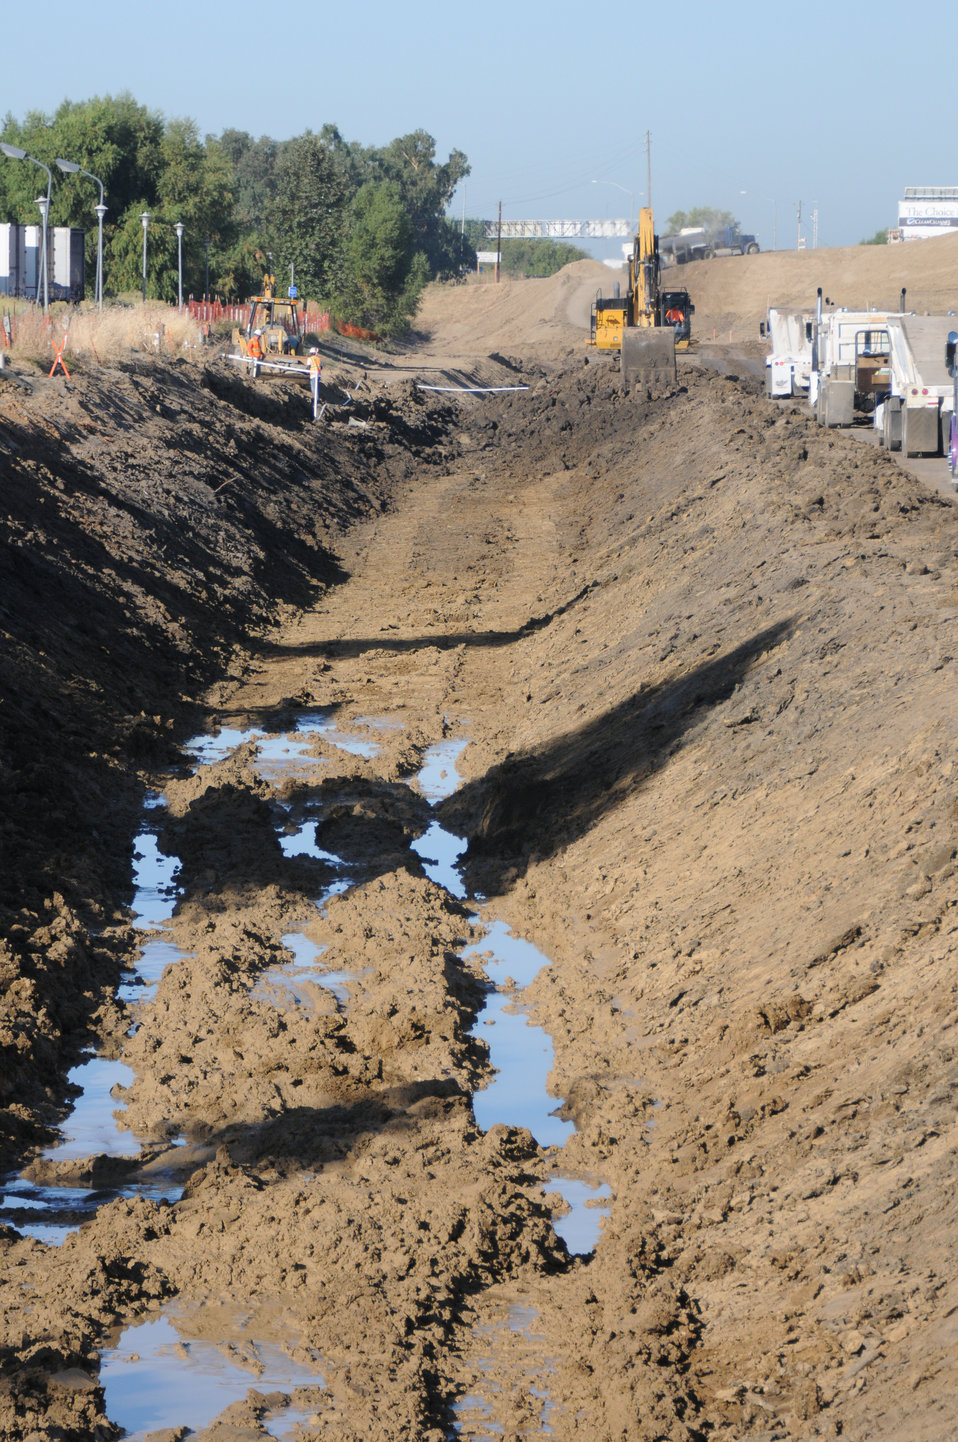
Seepage collects at the Yolo Bypass

Seepage collects at the bottom of a Yolo Bypass levee in West Sacramento, Calif., Aug. 18, 2011. Under its West Sacramento Project, the U.S. Army Corps of Engineers Sacramento District is repairing a slump in the levee and installing a drain and pumps to move water seeping into the levee directly into the bypass.